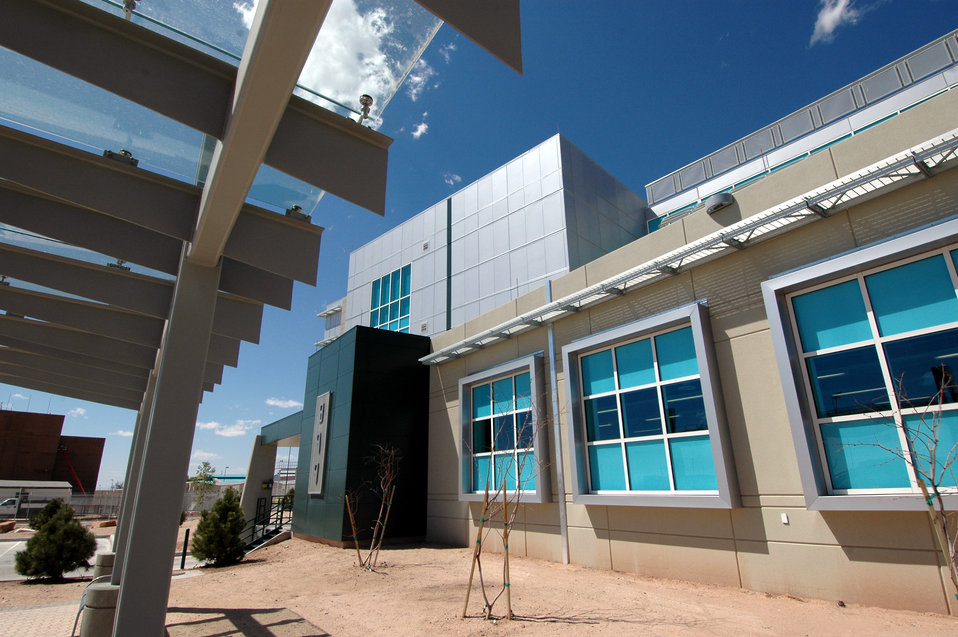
THE JOINT COMPUTATIONAL ENGINEERING LABORATORY AT SANDIA NATIONAL LABORATORY.

The Joint Computational Engineering Laboratory can house 175 researchers and support staff. The JCEL facility was funded by DOE-NNSA's Advanced Simulation and Computing Program and represents an integral part of the Microsystems and Engineering Sciences Applications (MESA) Project. JCEL is a significant upgrade, consolidation and enlargement of Sandia's Computational capabilities which are important to DOE/NNSA's stockpile stewardship mission.